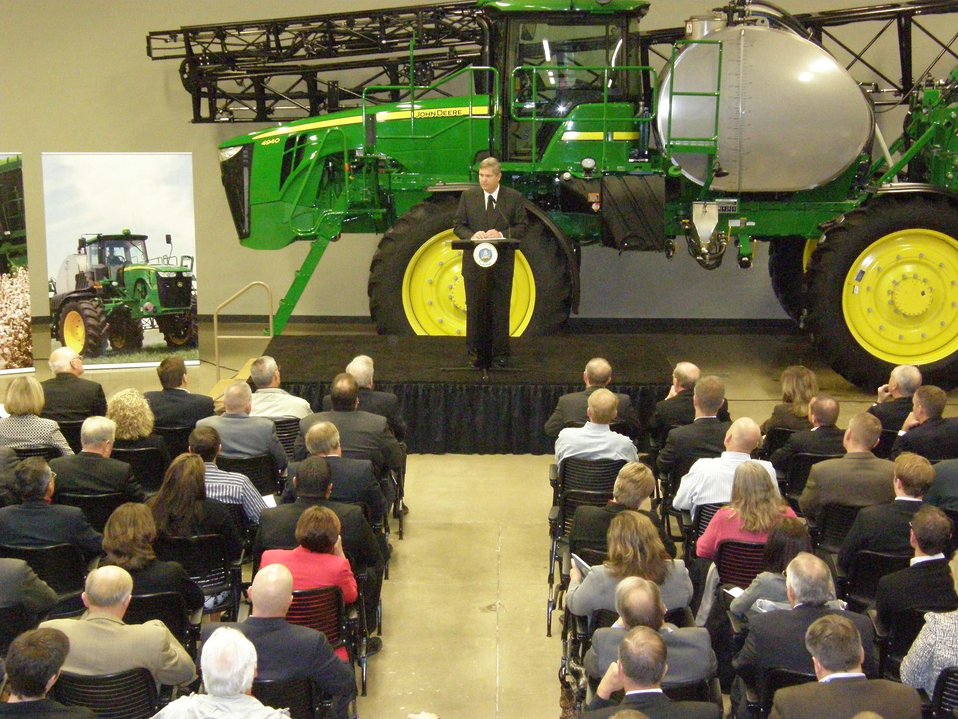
Agriculture Secretary Tom Vilsack toured the John Deere Plant in Des Moines, IA on Monday, Oct. 24, 2011. Secretary Vilsack stressed that the 2012 Farm Bill must stay focused on providing effective aid to farmers affected by natural disasters while increasing research funding and maintaining a commitment to conservation.